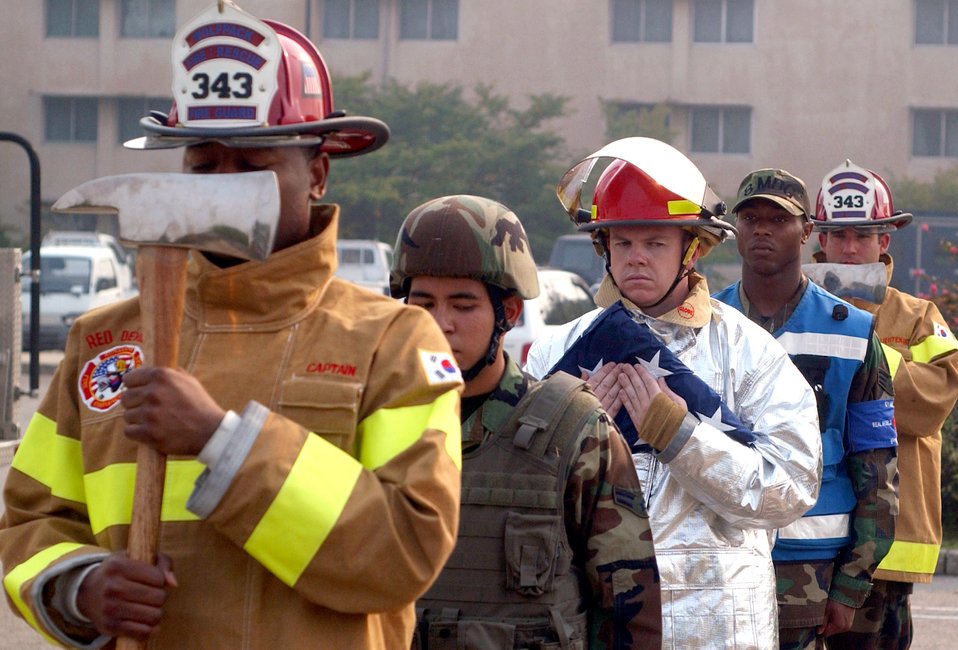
Kunsan Airmen remember Sept. 11

Airmen from the base fire department, 8th Medical Group and 8th Security Forces Squadron form the colors team for the Sept. 11, 2001, remembrance ceremony Sept. 11 at Kunsan Air Base, South Korea. The ceremony marked the sixth anniversary of the terrorist attacks in New York City, the Pentagon and Shanksville, Pa.